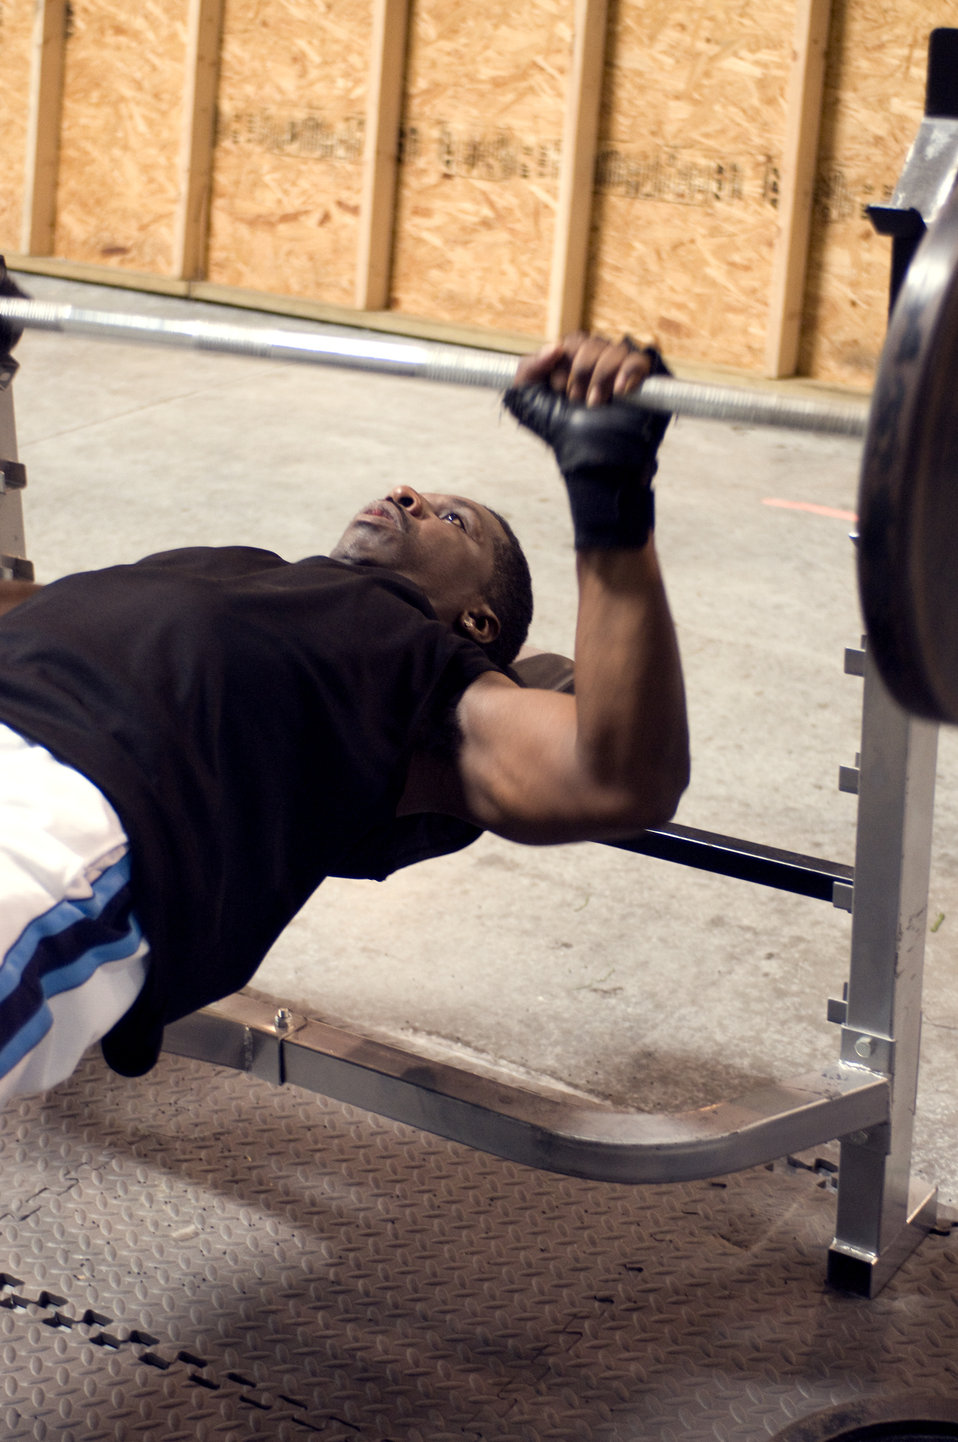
This man was inside a gymnasium performing various strength-training exercises. At this point in his exercise routine, he was performing bench presses. From this particular view, you can see only his left torso, arm and head. His left hand was wrapped around the bar, and he was at the high-pint, or end-point of the repetition, holding the weight bar above his chest, with both his arms flexed at 90o to the horizontal plane. Hopefully, he was also keeping well hydrated during his exercise regimen by drinking fresh water during his workout.